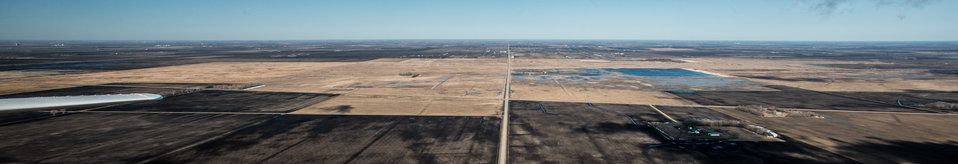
Ehlert U.S. Department of Agriculture (USDA) Natural Resources Conservation Service (NRCS) Wetland Reserve Program (WRP) in Wilkin County, MN, on Tuesday, April 30, 2013. For information about this and other programs from the USDA Red River Basin Initiative (RRBI) please see www.mn.nrcs.usda.gov/news/features13/RRBI.html.